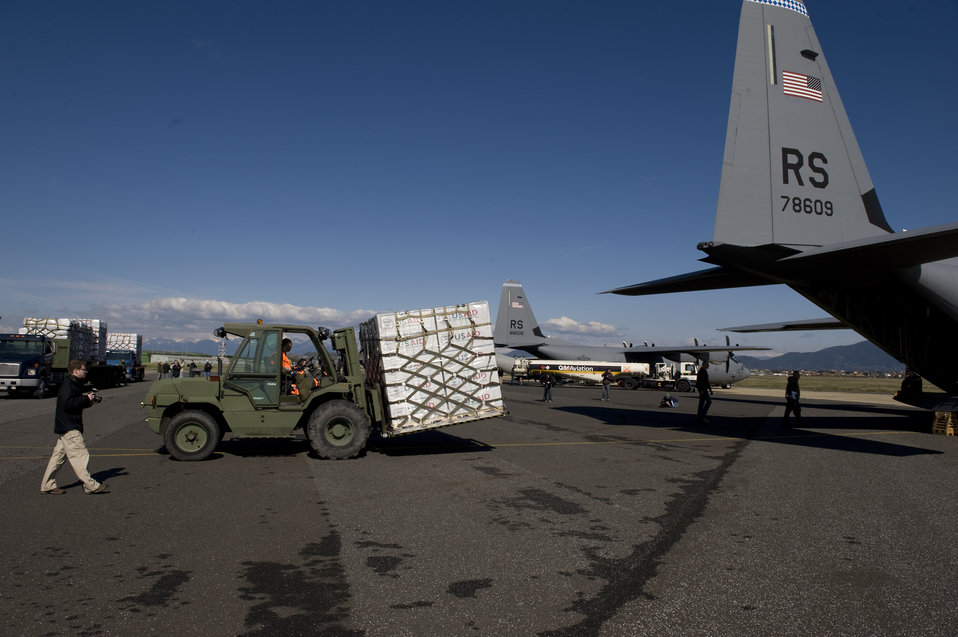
U.S. Airmen Load Blankets, Tarps, and Water Containers Onto Aircraft

U.S. Airmen, from the 435th Air Mobility Squadron out of Ramstein Air Base, load blankets, tarps, and water containers onto C-130 aircraft in Pisa, Italy, on March 4, 2011. These aircraft will then fly these supplies to Tunisia. The U.S. Government is working intensely with the International community to meet the humanitarian needs of the Lybian people and others in the country who fled across the borders. [Staff Sgt. Brendan Stephens photo/ U.S. Army photo]